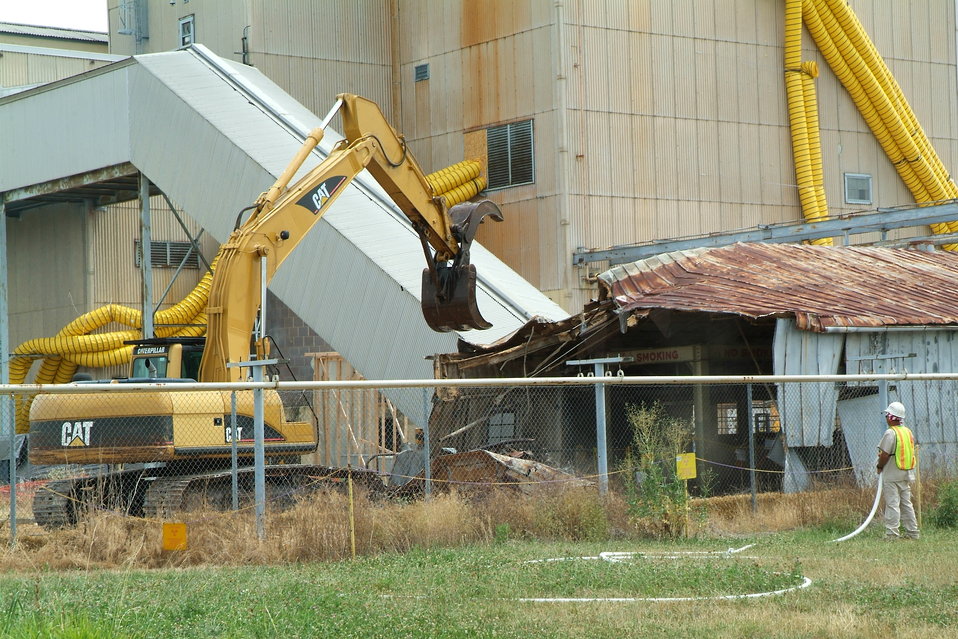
Magnesium storage during demolition

Recovery Act work conducted at the Paducah site.